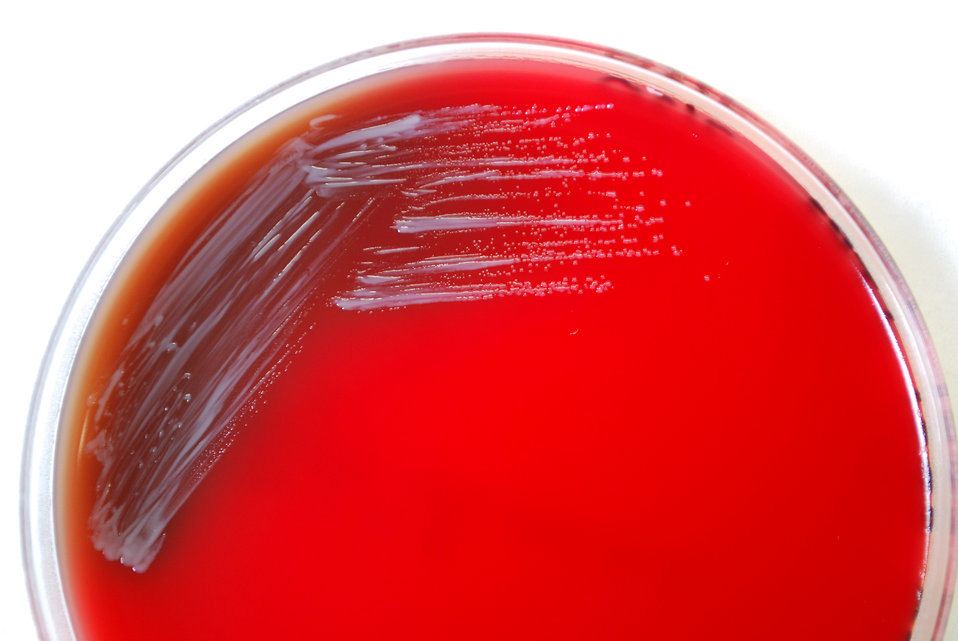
An enlarged view of PHIL 12241, this photograph depicts the colonial morphology displayed by Gram-negative Brucella abortus bacteria, which was grown on a medium of sheep blood agar (SBA), for a 48 hour time period, at a temperature of 37�C.How is brucellosis transmitted to humans, and who is likely to become infected?